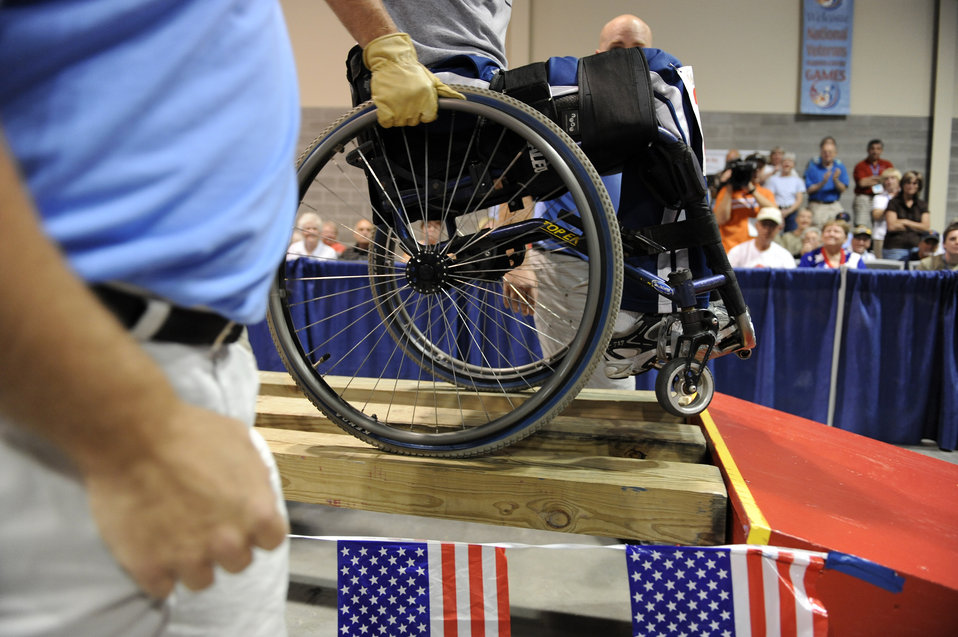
Volunteers ensure success at Veterans Wheelchair Games

Sean Halsted competes in the slalom super G competition during the 29th National Veterans Wheelchair Games July 16 in Spokane, Wash. Mr. Halsted is an Air Force veteran and resides in Rathdrum, Idaho.